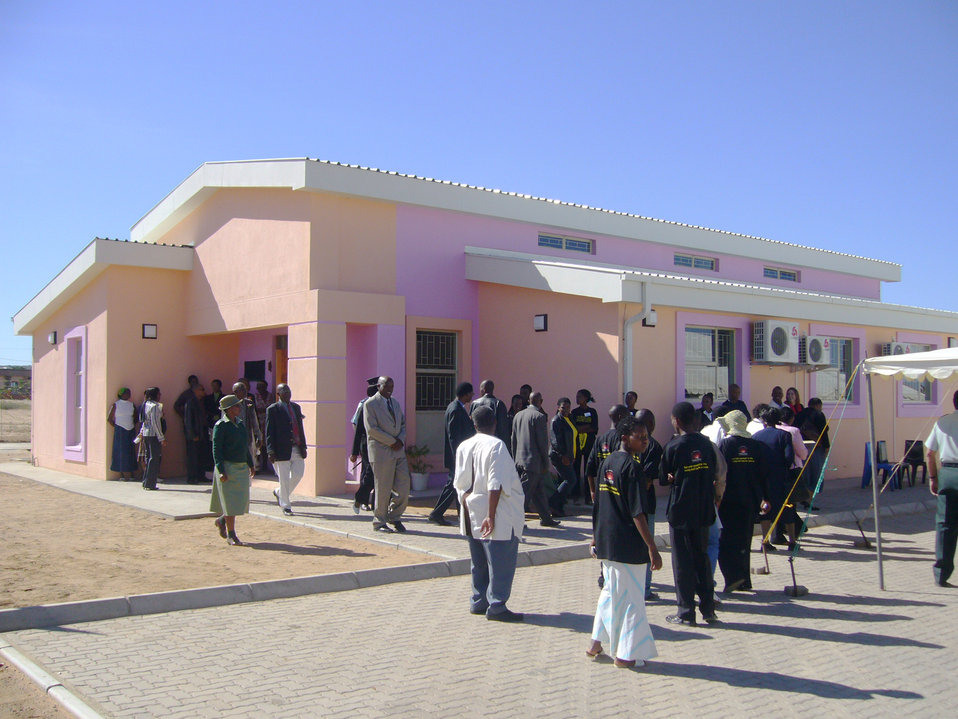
DOD humanitarian projects help fight HIV epidemic

People tour their new volunteer AIDS counseling and testing center, which opened May 9 at Molepole, Botswana. The center is one of five other centers aimed at mitigating the effects of the HIV virus. In addition to the counseling and testing centers, the DOD is helping build orphan daycares and youth centers for orphans and children of all ages. According to recent estimates, 17.1 percent of Botswana's 1.7 million people are HIV-positive.